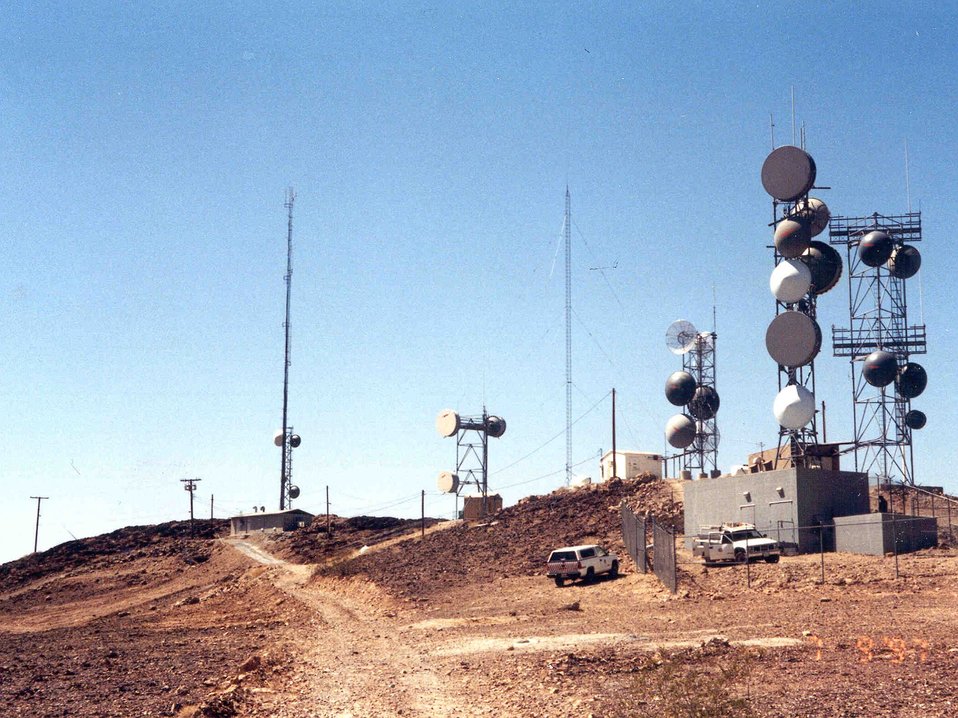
Big Maria Communication Site